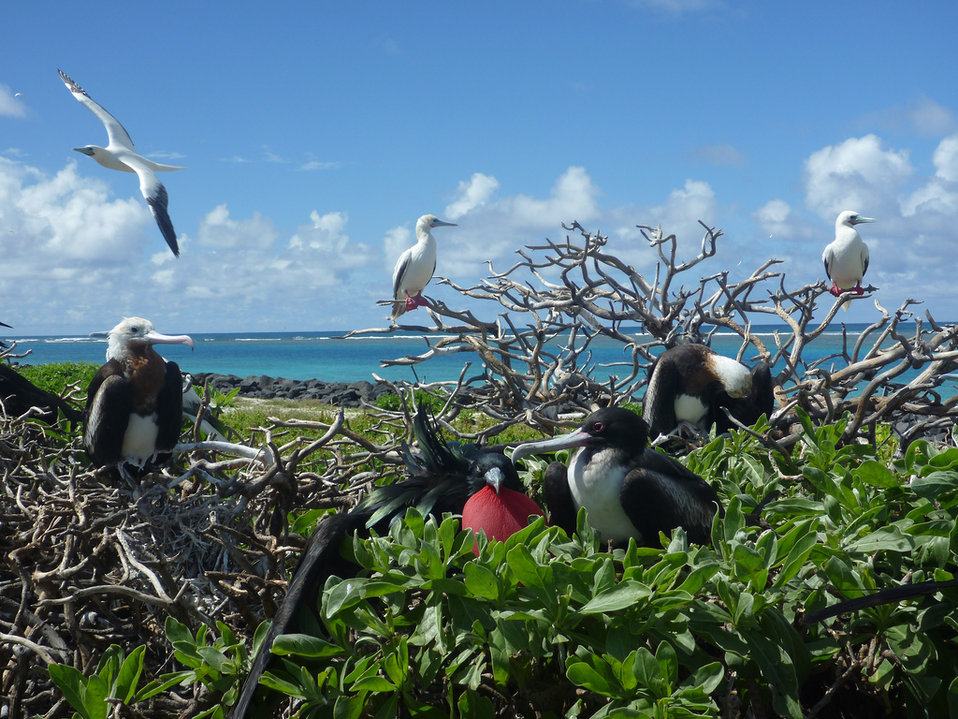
Hawaiian haven for seabirds

Redfooted boobies and great frigatebirds
Hawaiian Islands National Wildlife Refuge
Photo: Sarah Youngren, USFWS
Pres. Teddy Roosevelt sent in the U.S. Marines to protect seabirds from plume and egg hunters in a vast swath of the Pacific, and in 1909 he gave them official wildlife conservation status as a wildlife refuge.